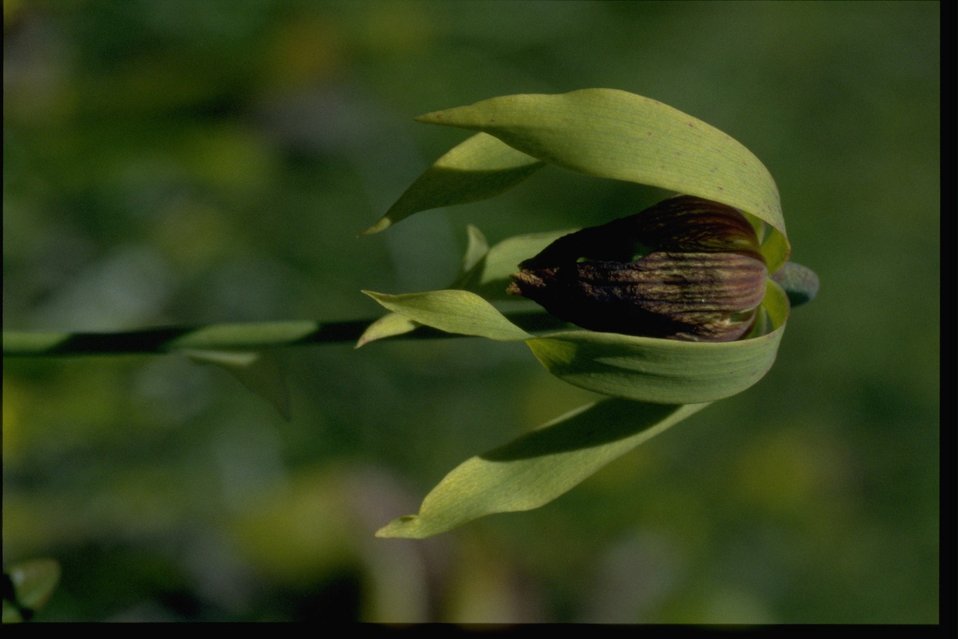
Closeup shot of Darlingtonia californica.